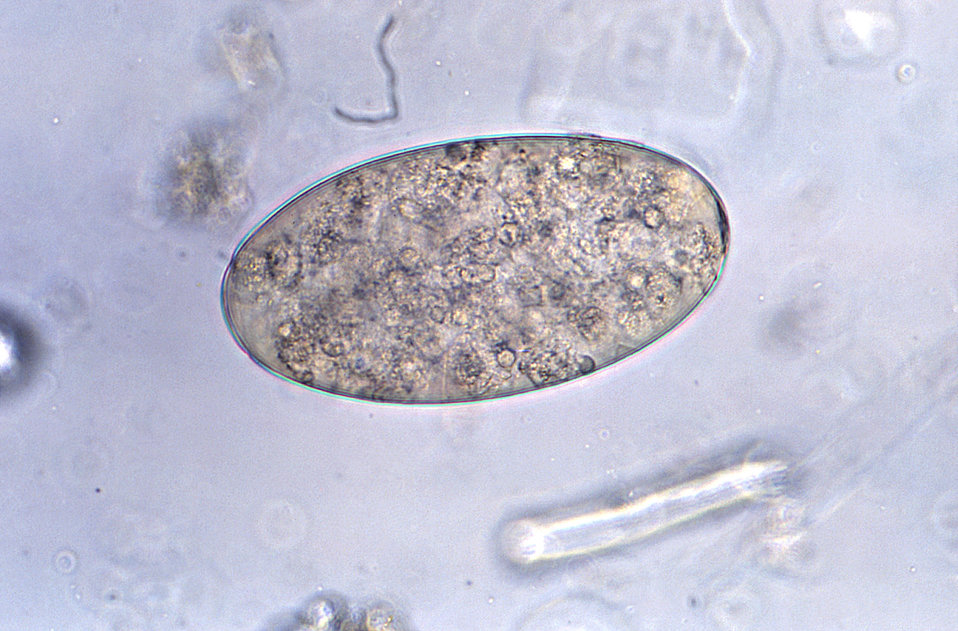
Under a high magnification of 400X, this photomicrograph revealed some of the ultrastructural morphology exhibited by a trematode, Fasciolopsis buski, egg, which is described as broadly ellipsoidal, operculated and measuring 130�m to 150�m long, by 60 �m to 90�m wide. These eggs are unembryonated when passed in feces. The eggs of F. buski can be difficult to distinguish from Fasciola hepatica, although the abopercular end of the latter often has a roughened or irregular area.